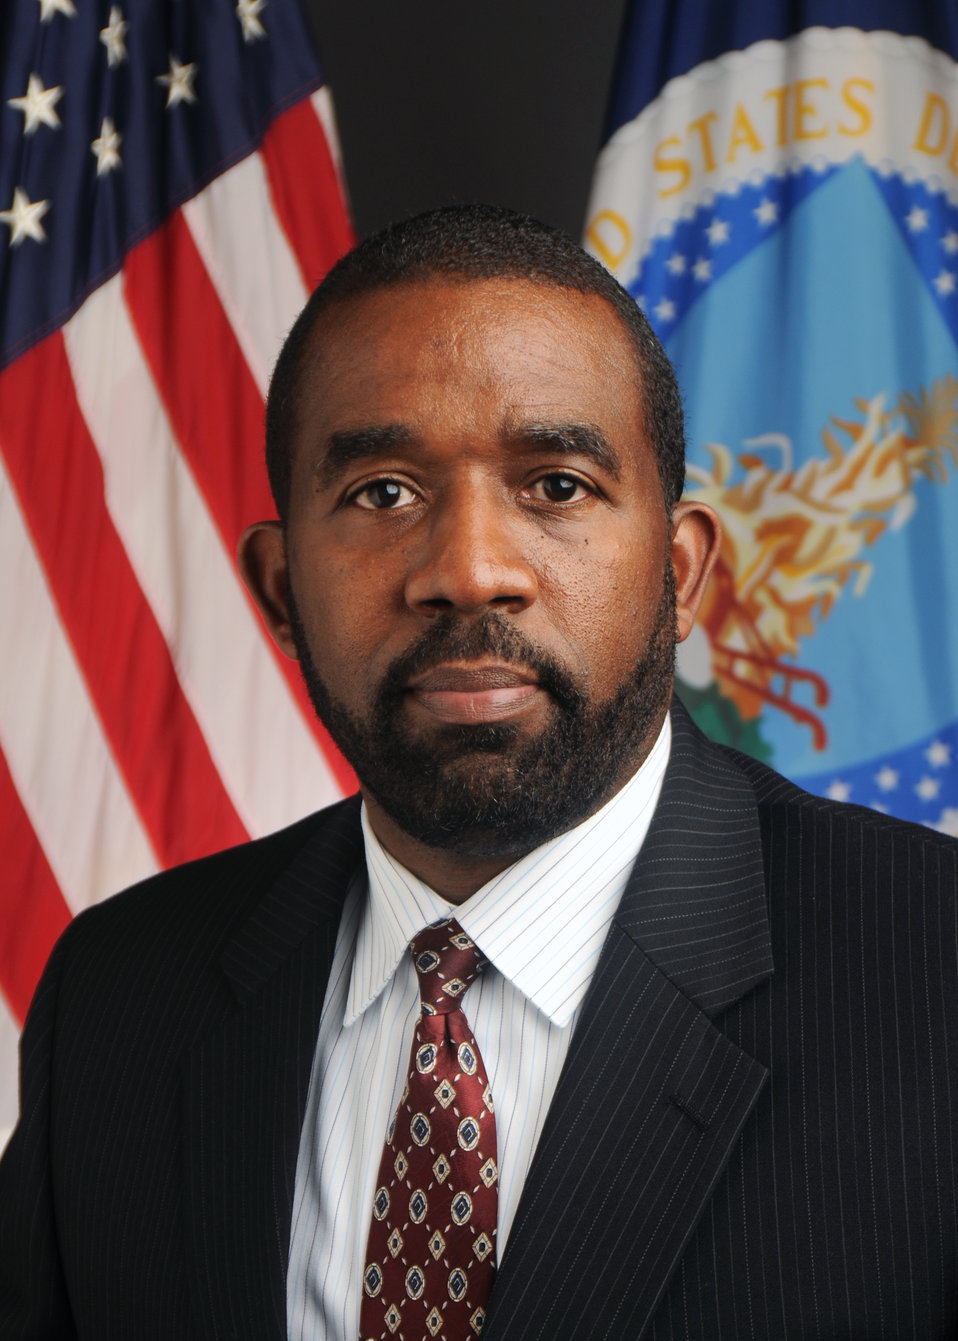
10di1045-002 Director of the Office of Budget and Finance Ricky Valentine

Director of the Office of Budget & Finance Ricky Valentine.